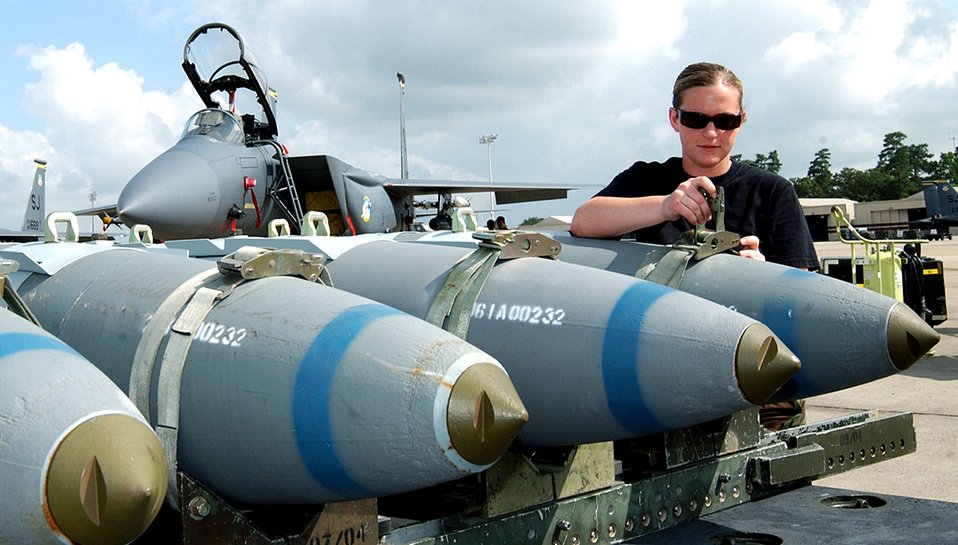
More strike in the Eagle

SEYMOUR JOHNSON AIR FORCE BASE, N.C. -- Staff Sgt. Jessica Parris removes the straps from a joint direct attack munition June 10. Sergeant Parris is a weapons load crew member with the 336th Aircraft Maintenance Unit.